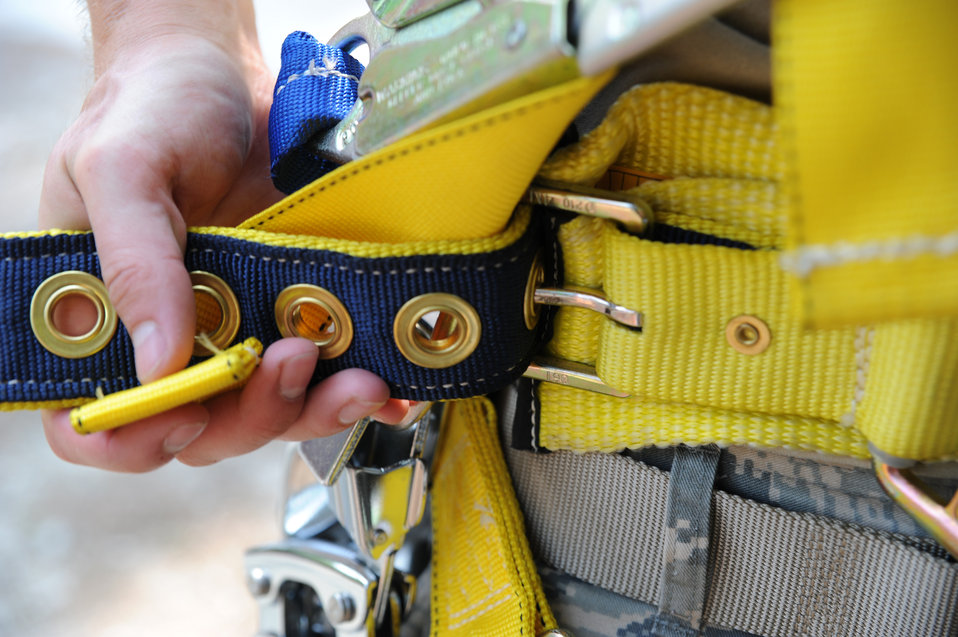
Airmen climb a radio tower

Senior Airman Matthew Baldyga unbuckles the safety harness after climbing the radio frequency tower for training at Naval Weapons Station Charleston, June 14. Airman Baldyga is a radio frequency transmissions journeyman with the 628 Communications Squadron.